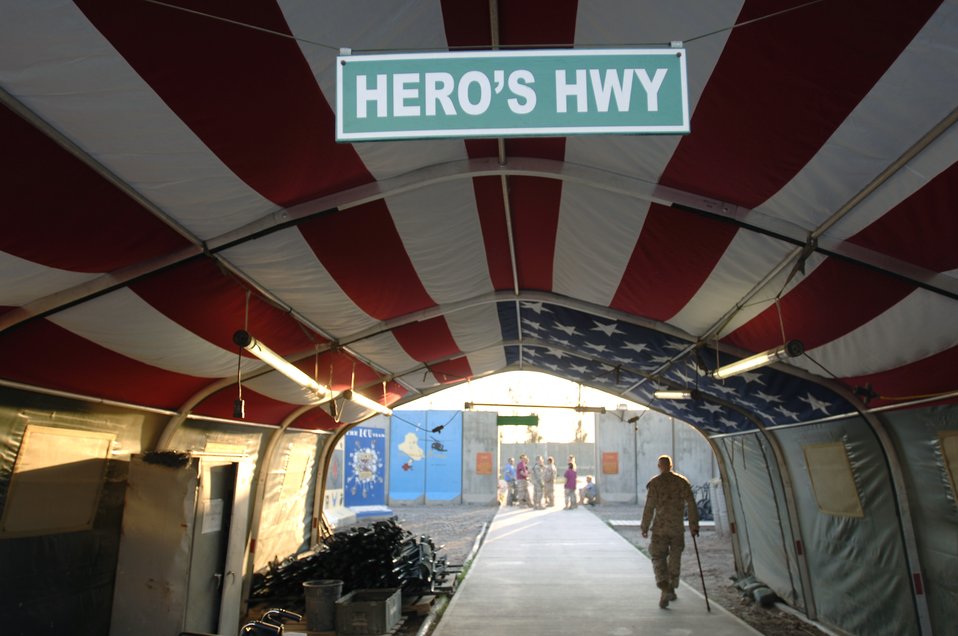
A hospital for heroes

Each month, hundreds of wounded Soldiers, Airmen, Marines, Sailors and Iraqi personnel pass underneath the American flag canopy through Heroes' Highway at Balad Air Base, Iraq. Ninety eight percent of the patients treated at Balad's Air Force Theater Hospital survive.